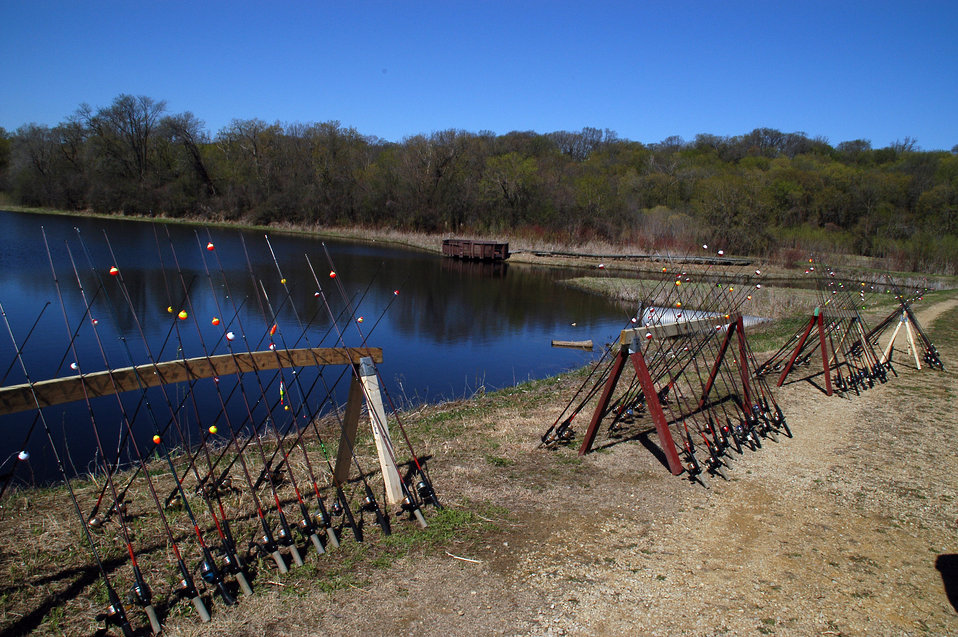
Fishing Rods

Volunteers were prepared for the 230 Elementary Students that attended Kid's Fishing Day.